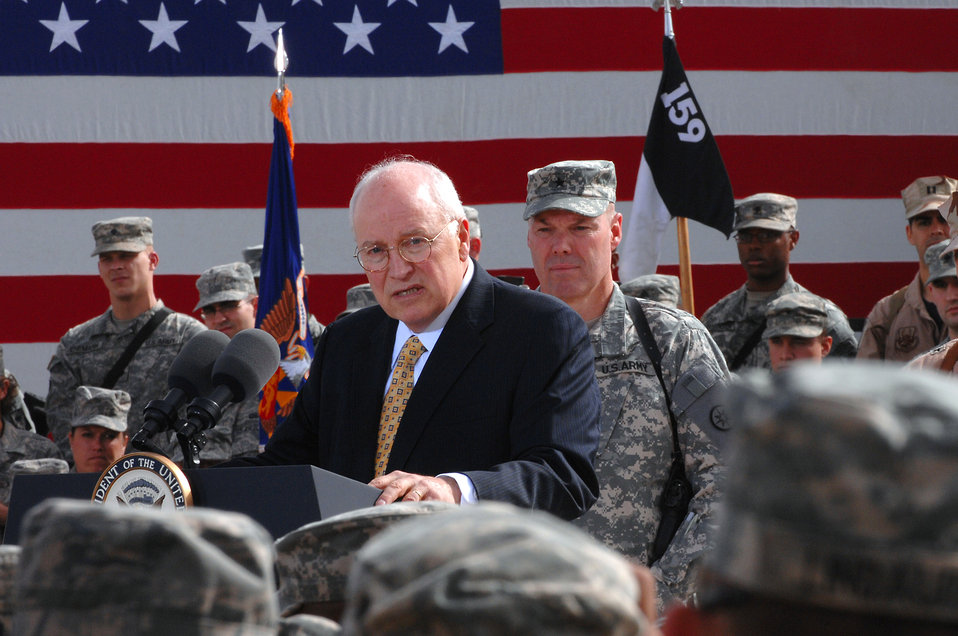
Vice president visits troops at Balad

Vice President Dick Cheney speaks to servicemembers March 18 at Balad Air Base, Iraq. The vice president came to the base to visit deployed military men and women serving in support of Operation Iraqi Freedom.